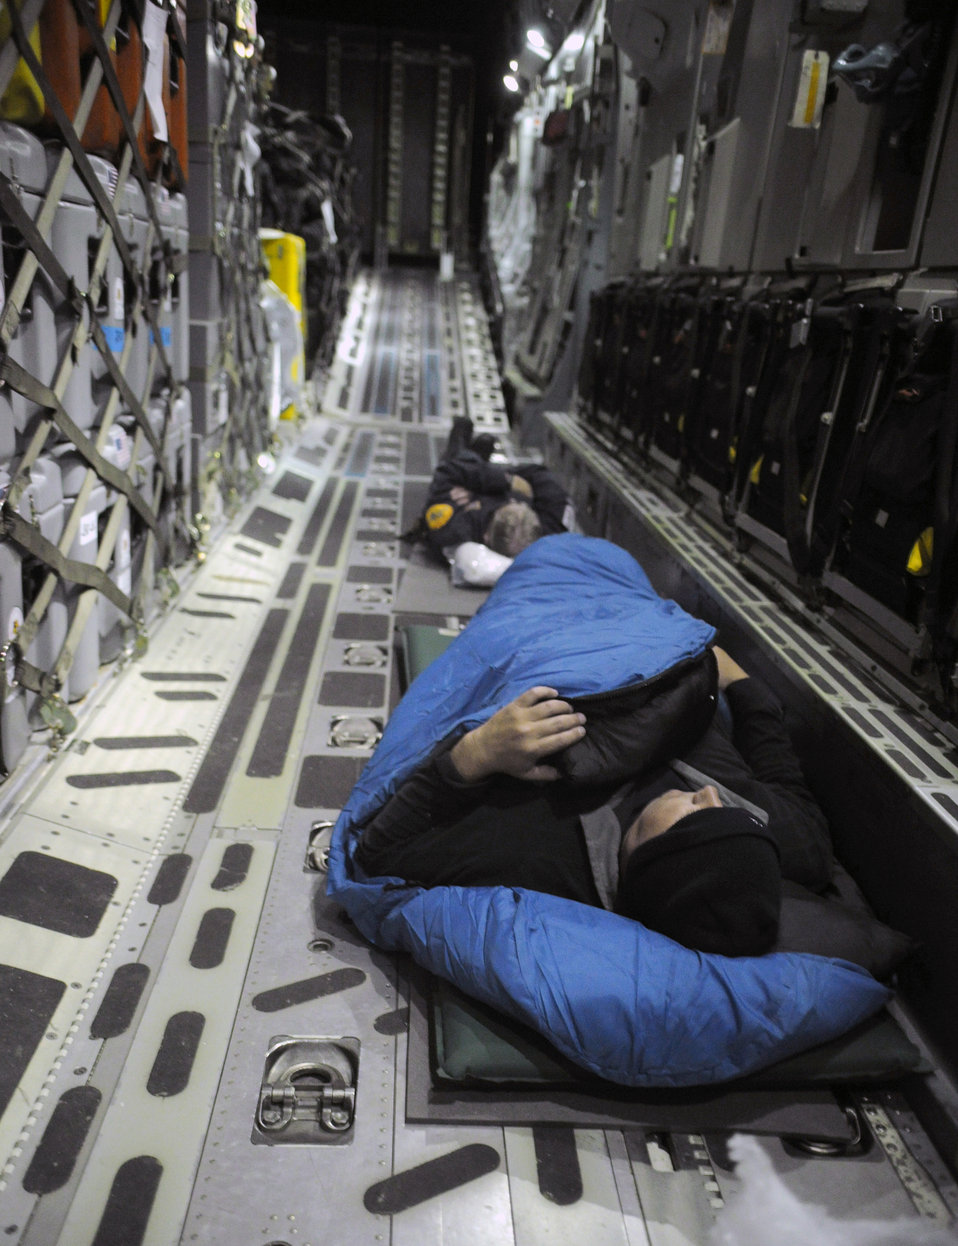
Emergency Response for Japan's Earthquake disaster

Members of the Los Angeles Search and Rescue team, Task Force 2 sleep on board a C-17 Globemaster III while en route to Japan during an emergency response on March 12, 2011. Aircrew from the 4th Airlift Squadron, McChord Air Force Base, Wash. are transporting members and equipment for Los Angeles Search and Rescue team to Japan to aid in recovery and care of victims of the recent earthquake.